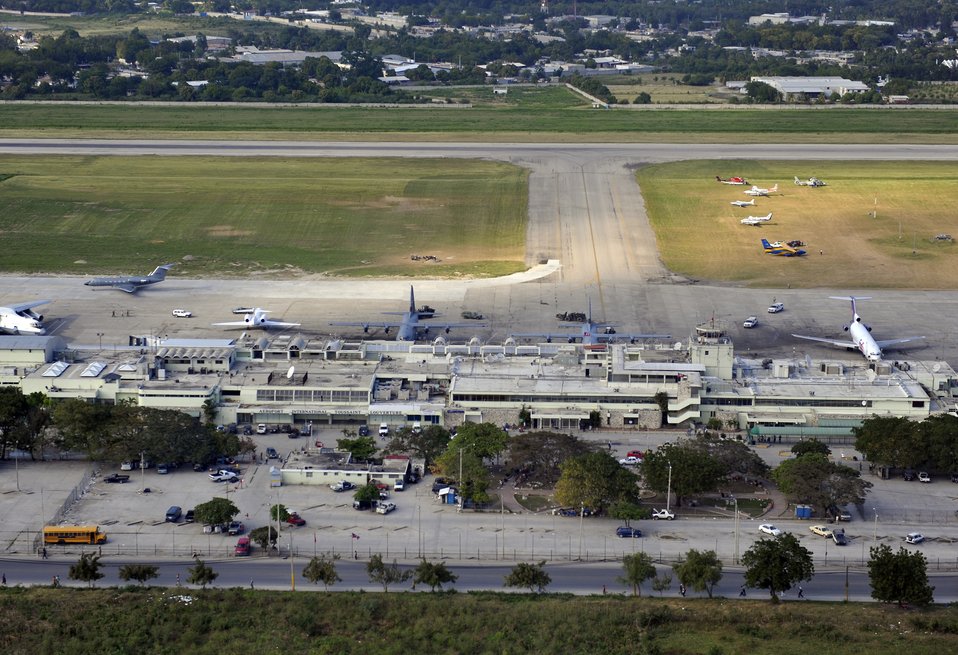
Combat controllers at work

An aerial view shows Toussaint L'Ouverture International Airport in Port-au-Prince, Haiti, Jan. 23, 2010. Aircraft from all over the world are flying in and out to drop off humanitarian aid and transport people out of the Haiti in the aftermath of the devastating earthquake that struck the country Jan. 12.